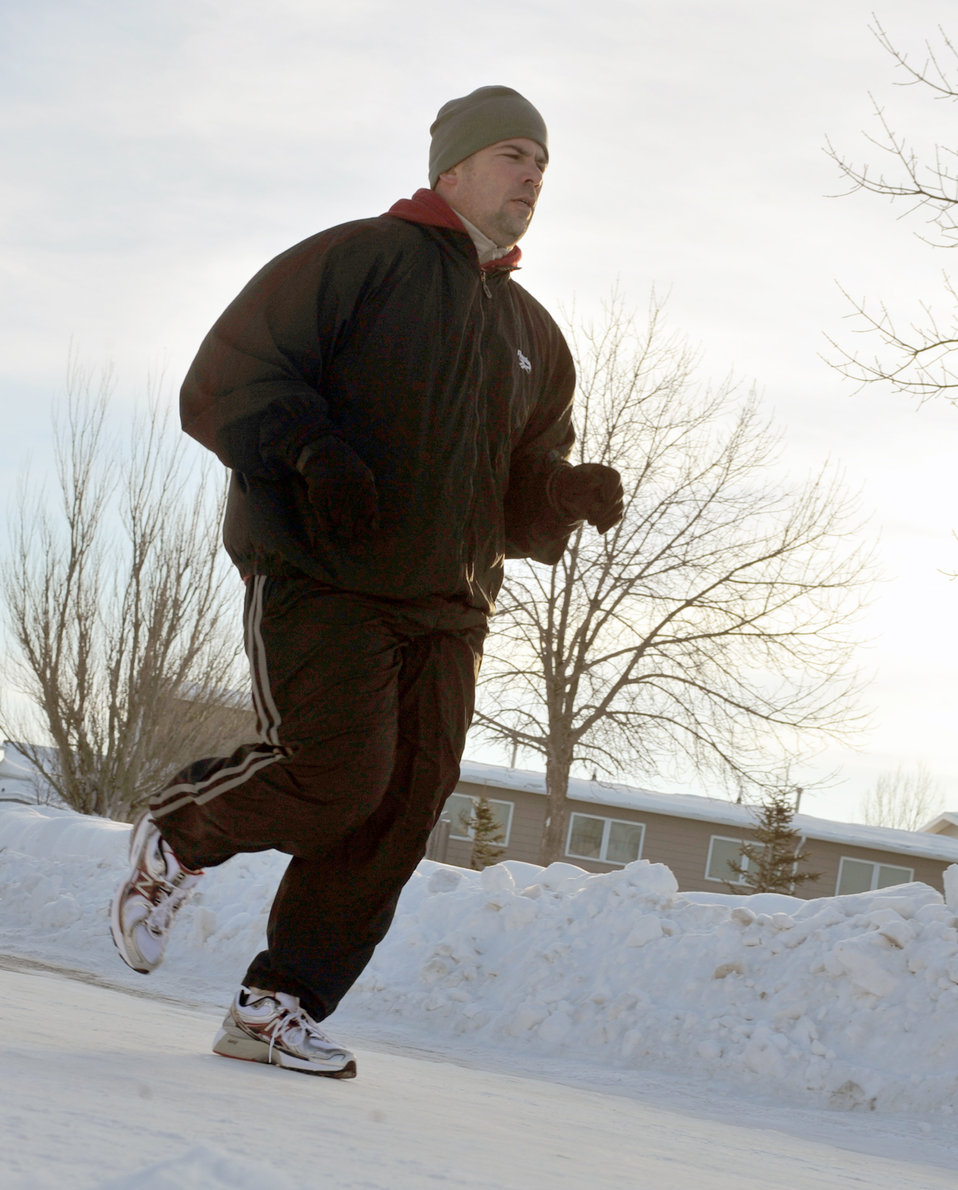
Tech. Sgt. Eddie Neher

As part of his training for a running event Tech. Sgt. Eddie Neher runs through his neighborhood Jan. 19, 2011, at Minot Air Force Base, N.D . Sergeant Neher signed up for this event despite recently being diagnosed with two different health conditions. Sergeant Neher is a 741st Missile Squadron missile facility manager.